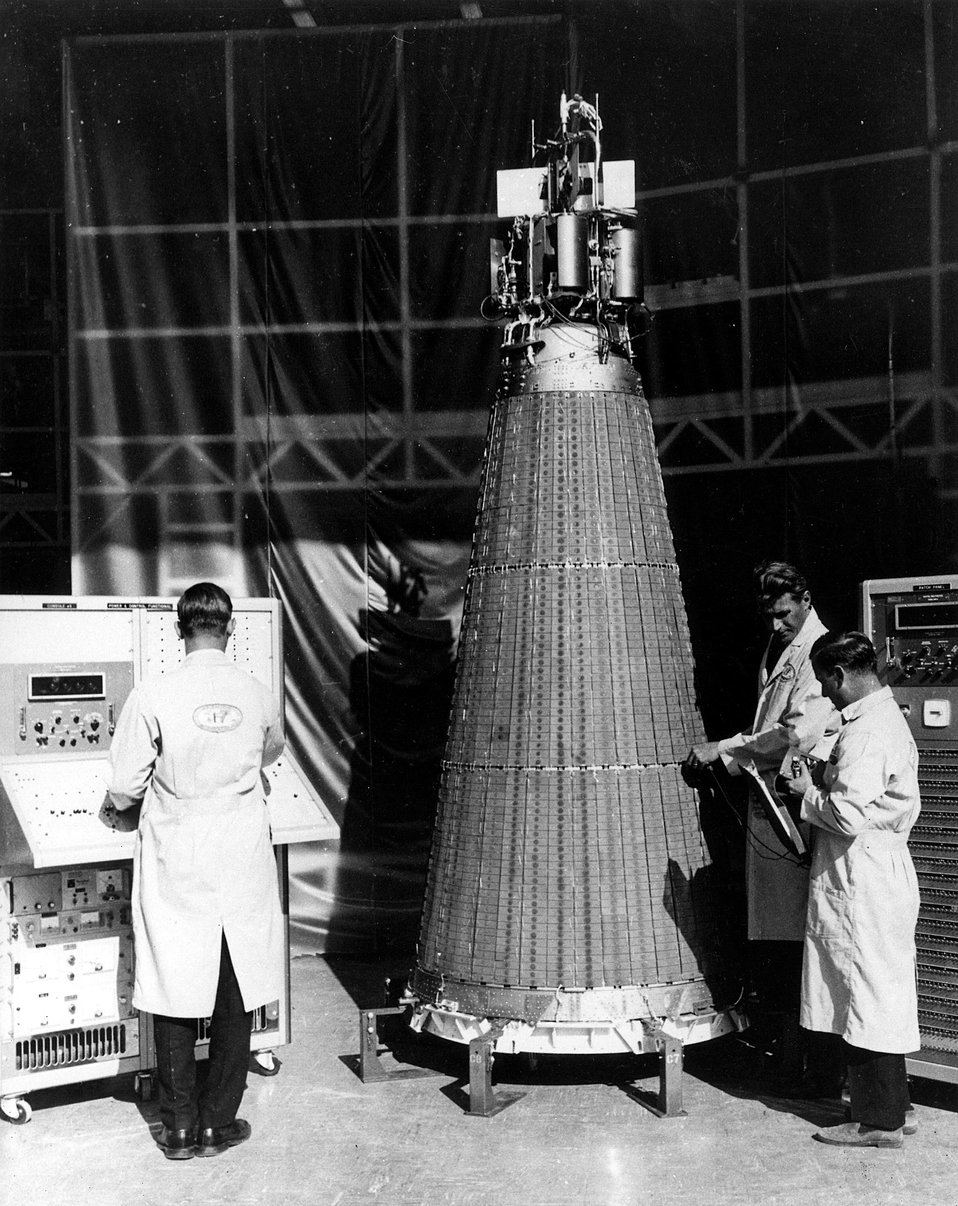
SNAP 10A space nuclear power unit, seen here, was subject of a paper presented at Geneva Atoms for Peace Conference, 1964.